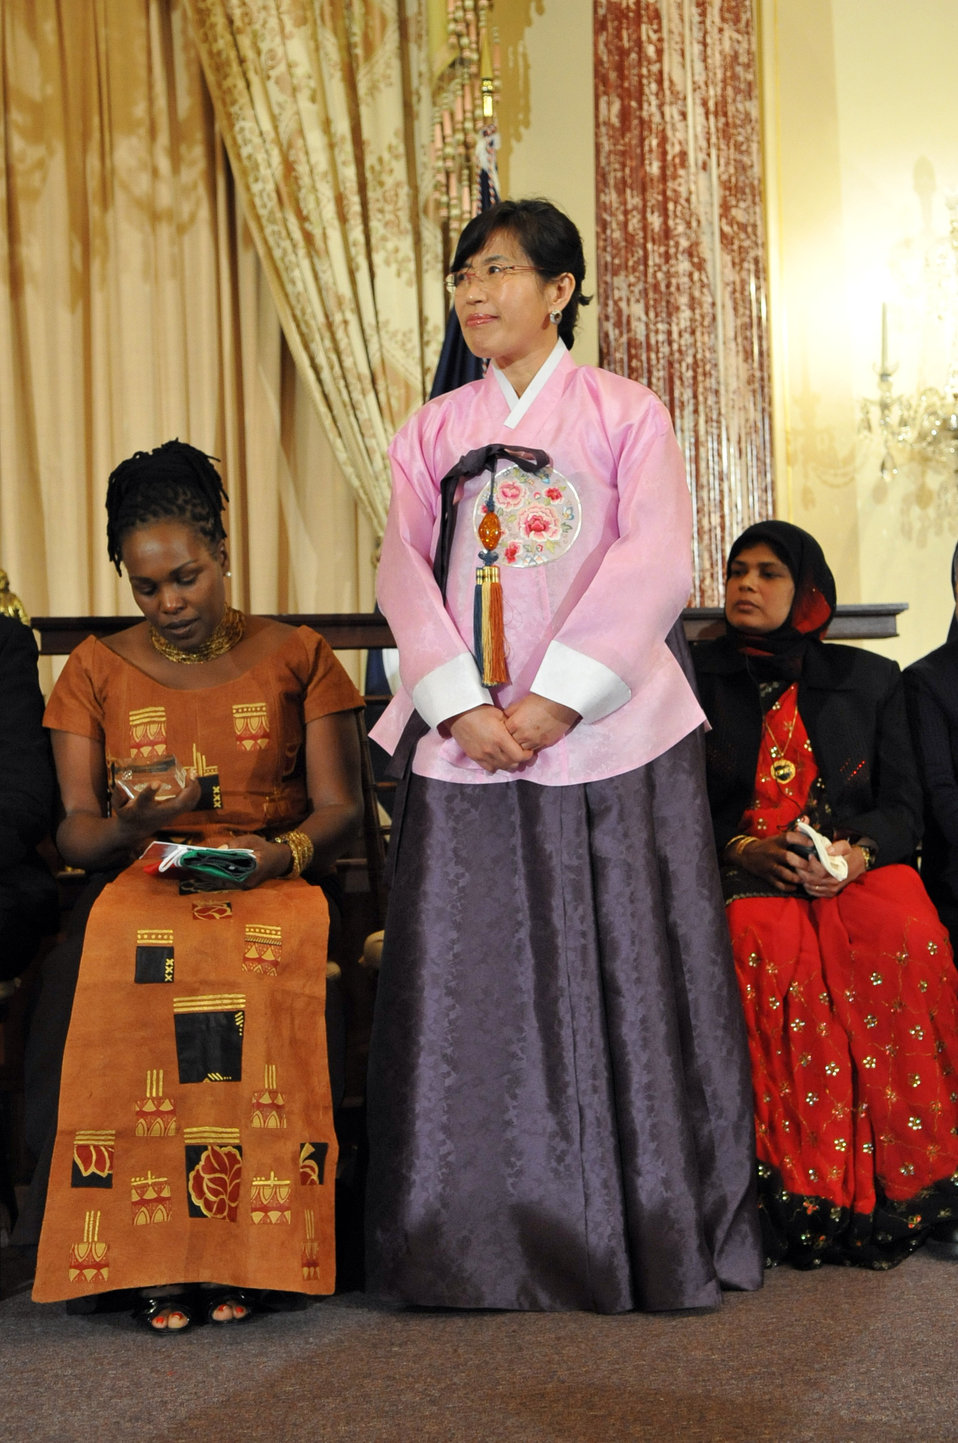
Honoree Dr. Lee Ae-ran of the Republic of Korea stands at the 2010 International Women of Courage Awards at the U.S. Department of State, Washington, D.C. March 10, 2010.